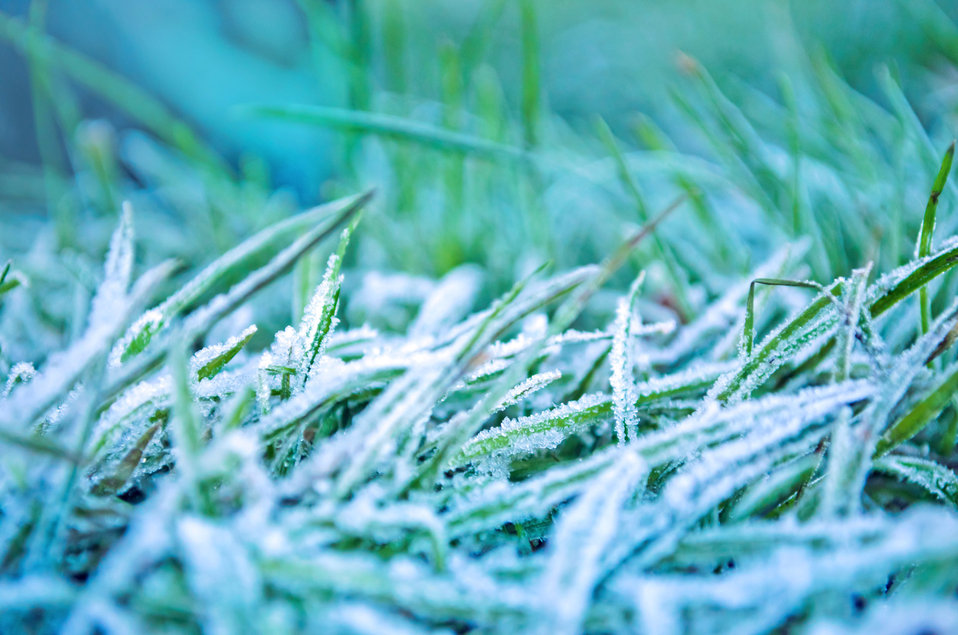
Morning frozen grass.